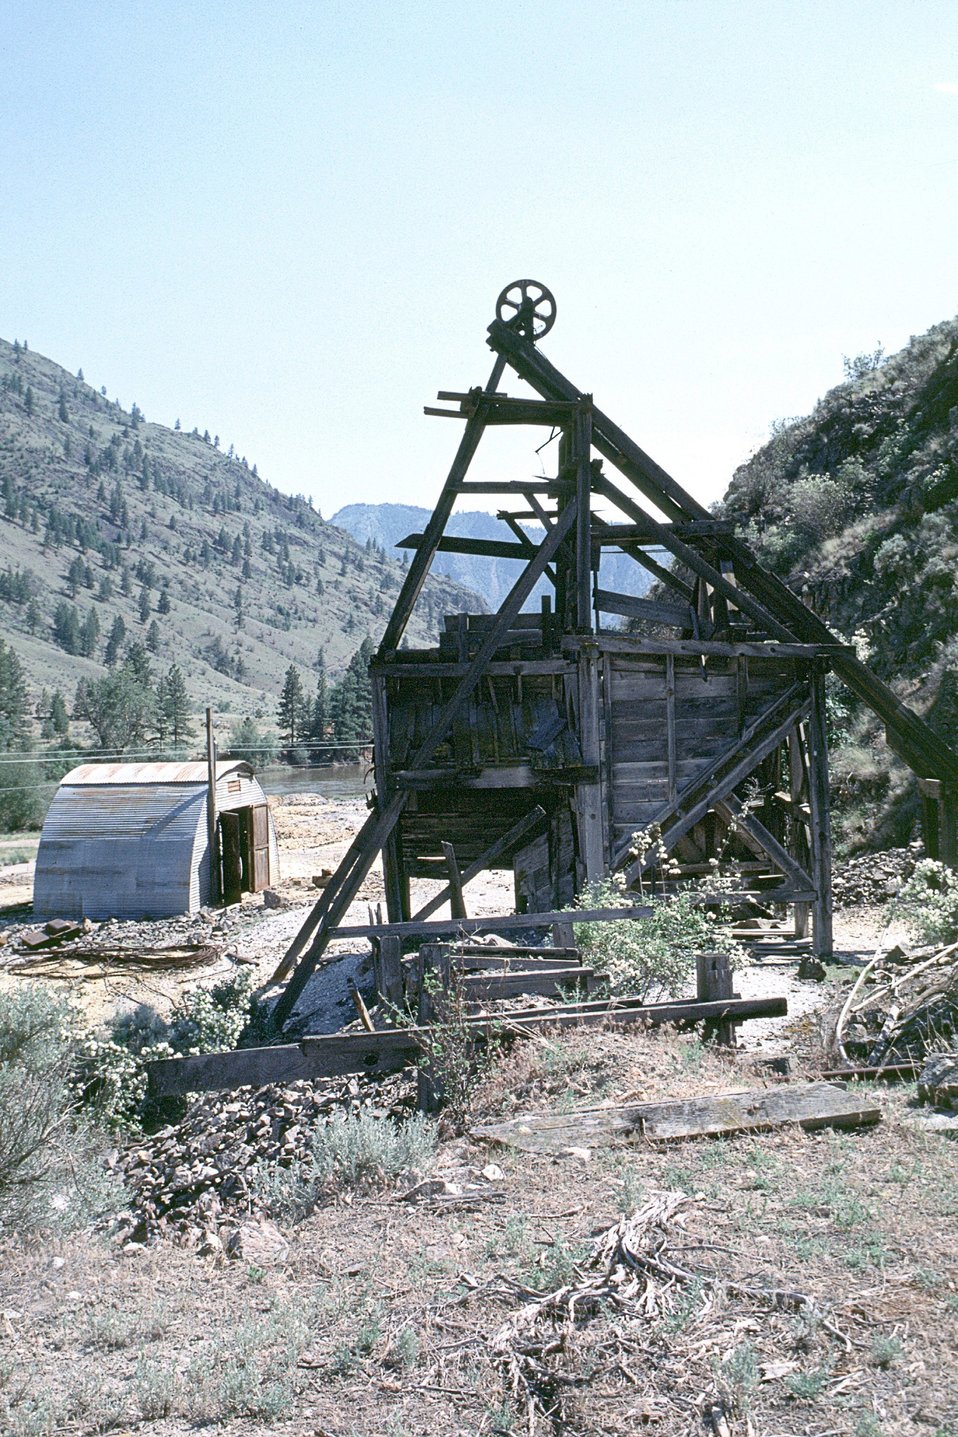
AML. Hoist at Kaaba-Texas Mine. Spokane District, Washington.